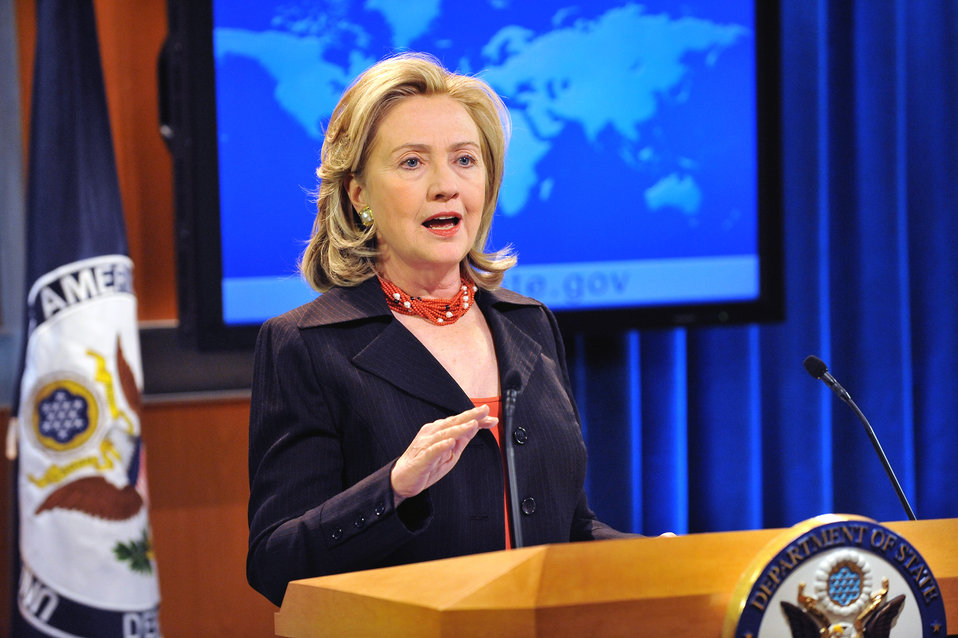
Secretary Clinton Releases the Annual Human Rights Report

U.S. Secretary of State Hillary Rodham Clinton releases the Country Reports on Human Rights Practices for 2010, at the U.S. Department of State in Washington, D.C., on April 8, 2011.